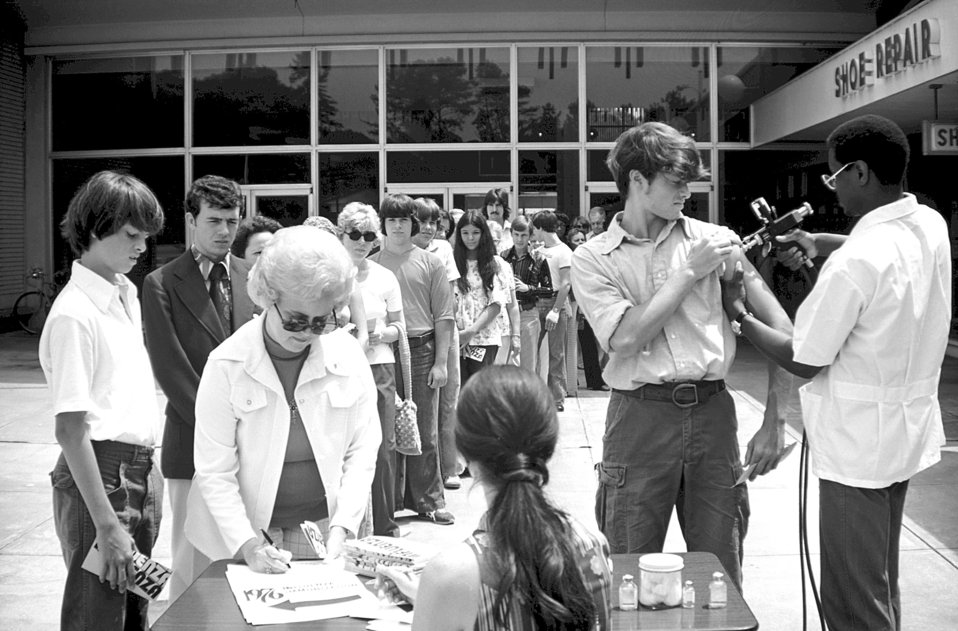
This image depicts a line of people each awaiting a New Jersey Influenza vaccination. Also known as the Swine Flu, this image was captured during a 1976 immunization campaign. Note that a jet-injector was being used to administer the vaccine. See PHIL 13350, for a color version of this image.